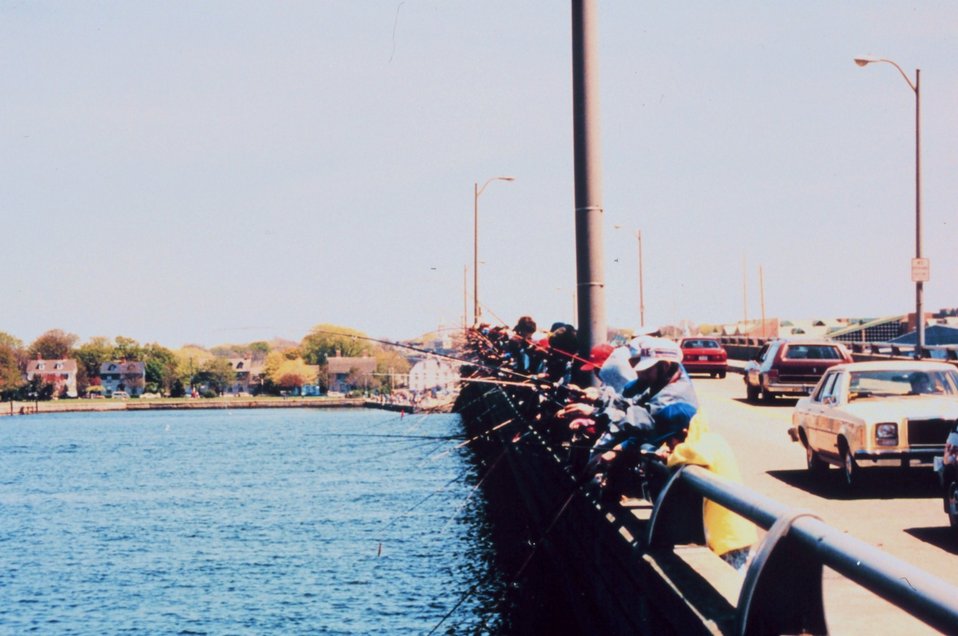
Squid fishing - not just a pastime but a passion in Rhode Island. Round-the- clock fishing.